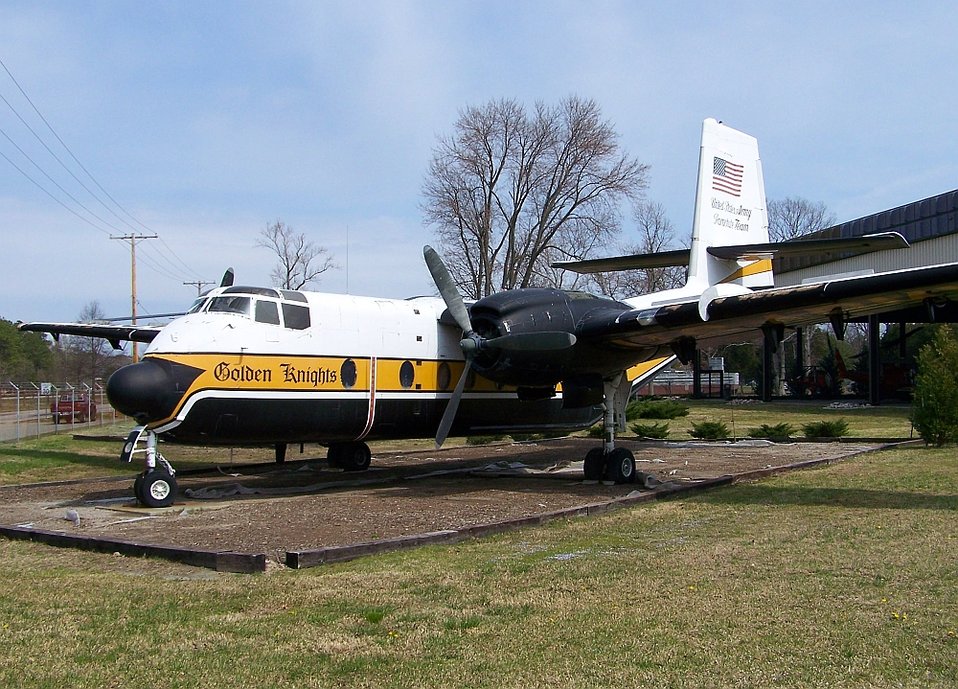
C7 Caribou at the US Army Transportation Museum, Fort Eustis, VA.
Licensing: Category:Images of airplanes